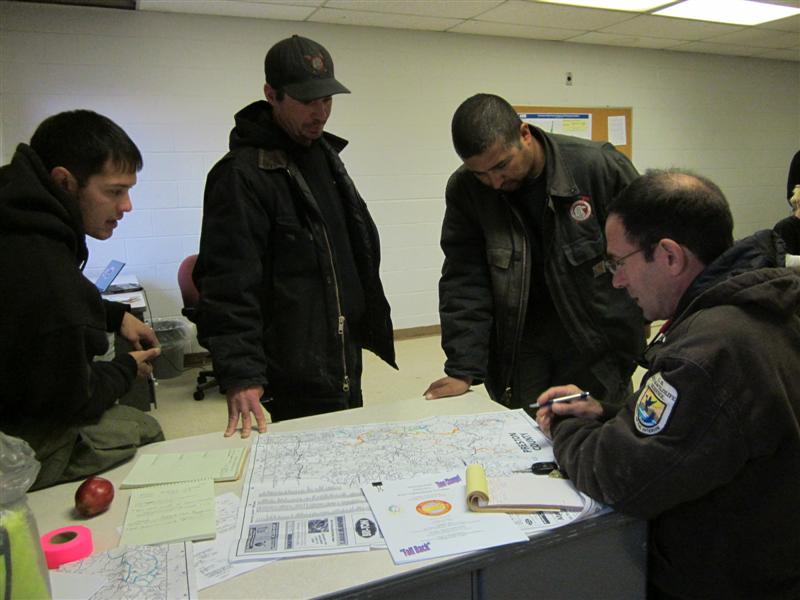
Service responds to Sandy in West Virginia

Greg Titus, a division fire management officer from St. Marks National Wildlife Refuge in Florida, briefs crews. Read more.